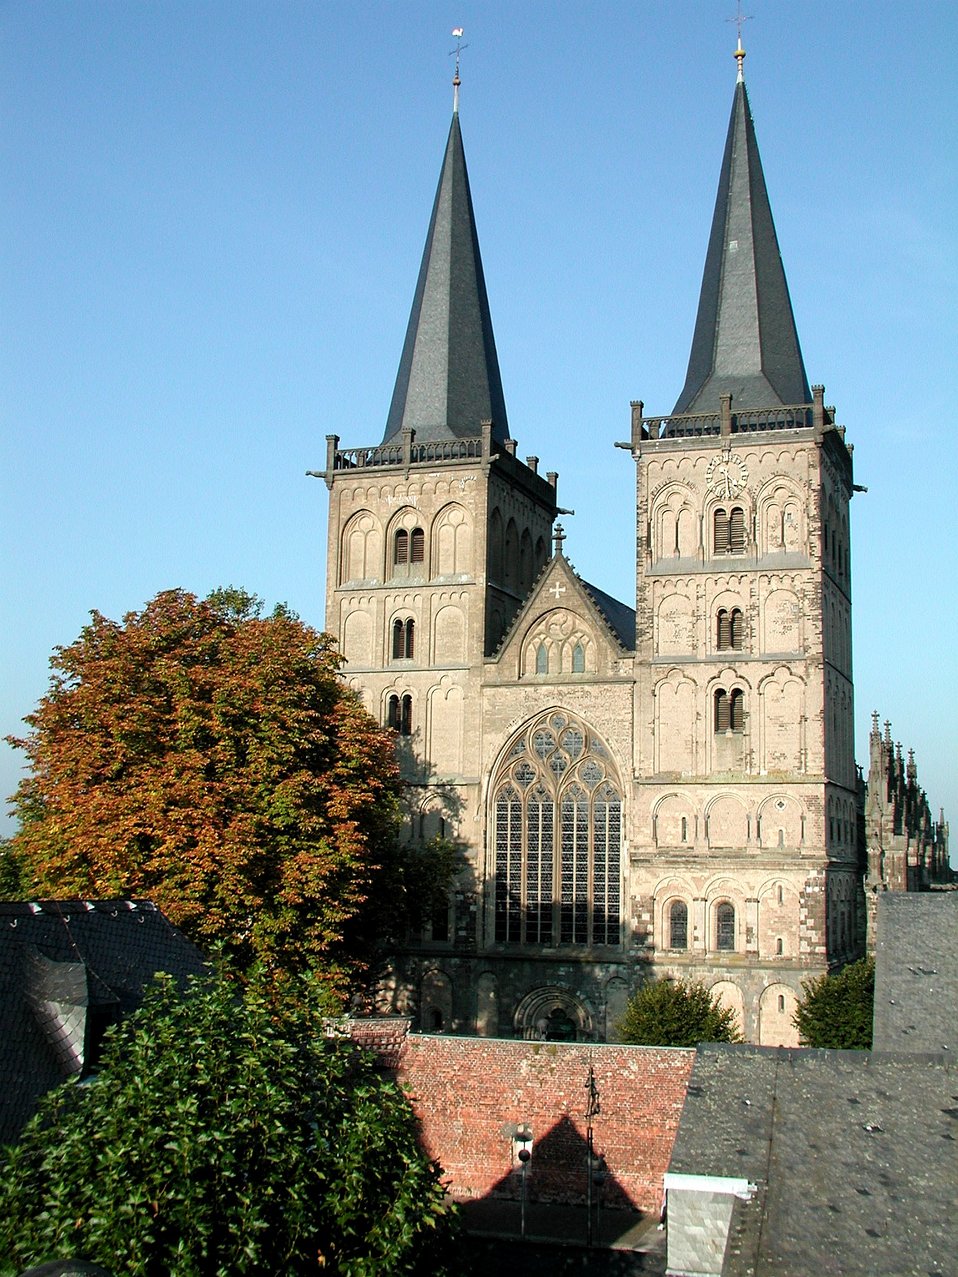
Deutsch: Der Viktordom in Xanten von Westen